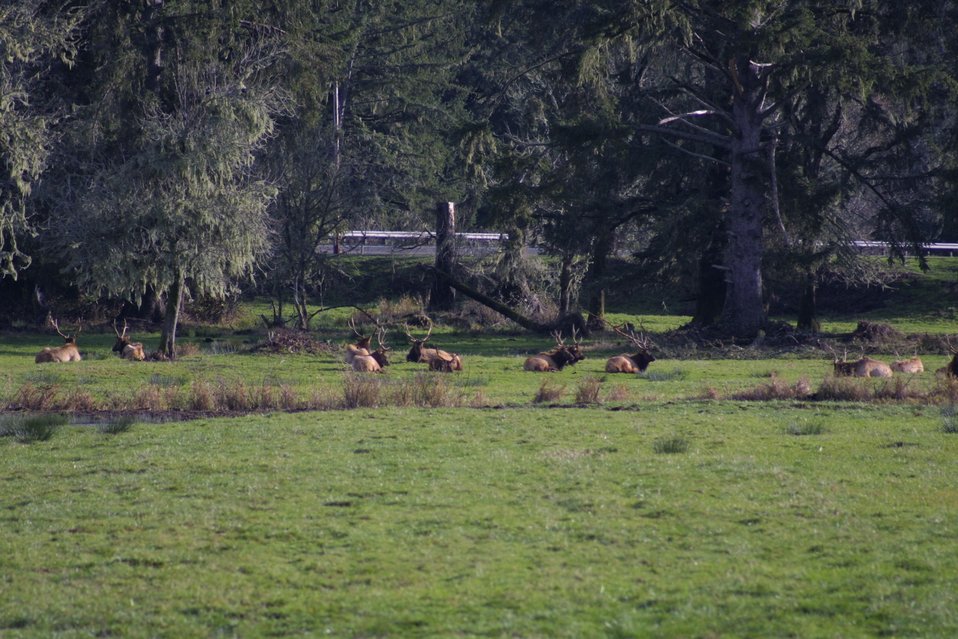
Elk at the Dean Creek Watchable Wildlife site near Reedsport, Oregon.